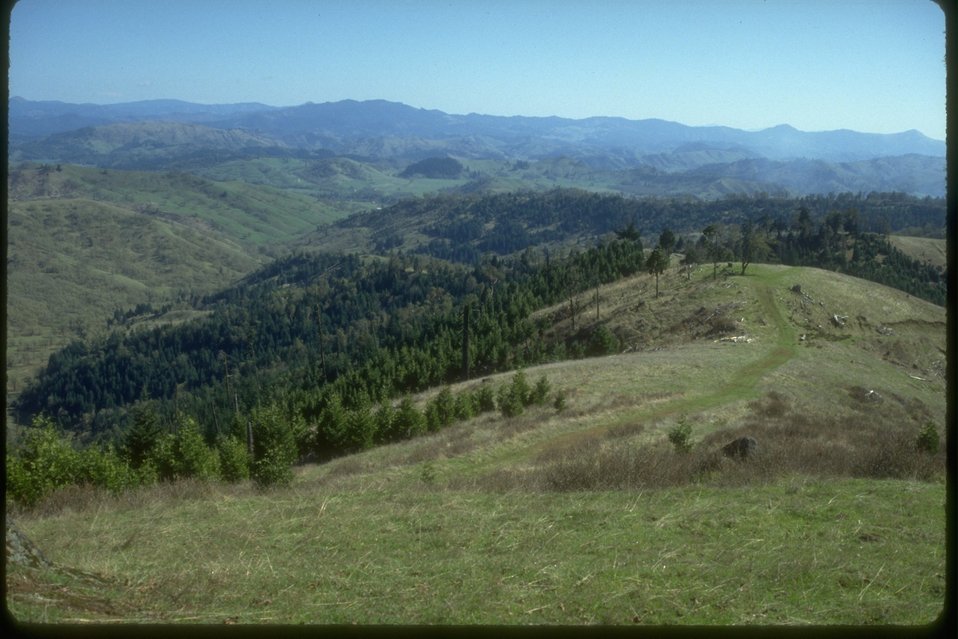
North Bank Habitat Management Area